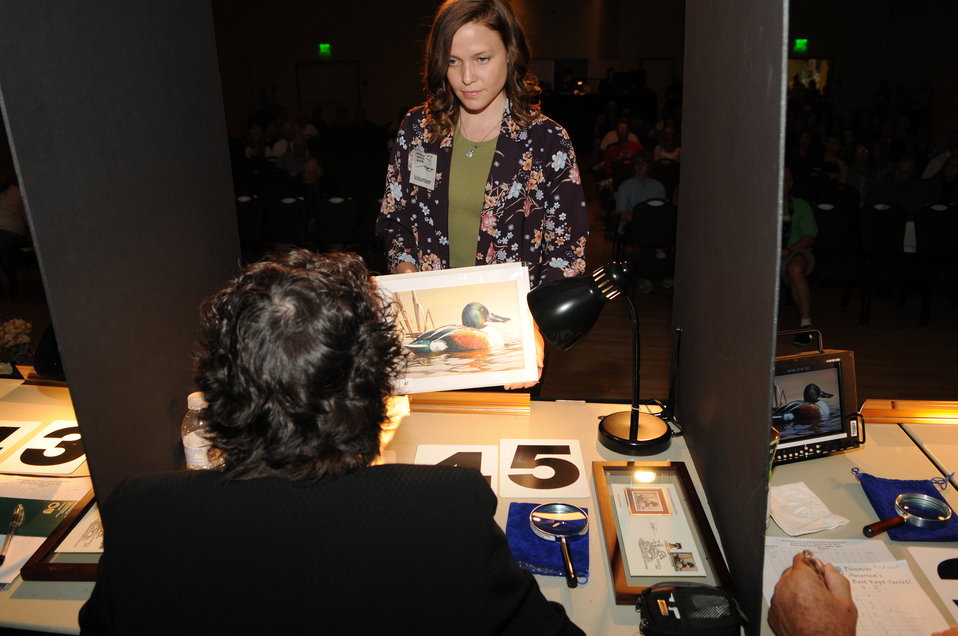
Judging

The U.S. Fish & Wildlife Service sponsored the 2012 Federal Duck Stamp Art Contest September 28 and 29 in Ogden, Utah, at Weber State University. A panel of five judges was responsible for choosing the art work used to design the 2013-2014 Migratory Bird Hunting and Conservation Stamp.